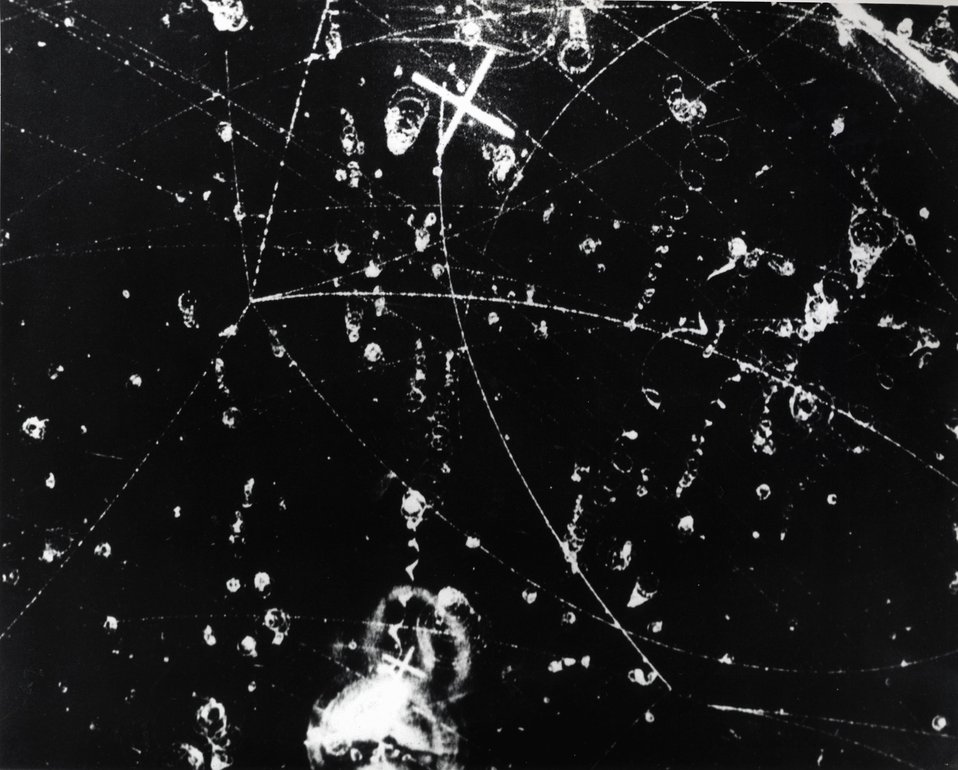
Nuclear particle tracks in the ten-inch bubble chamber mounted inside a superconducting magnet at Argonne show what happened to two negative K mesons that entered the bubble chamber from Argonne's ZGS.
c.1966